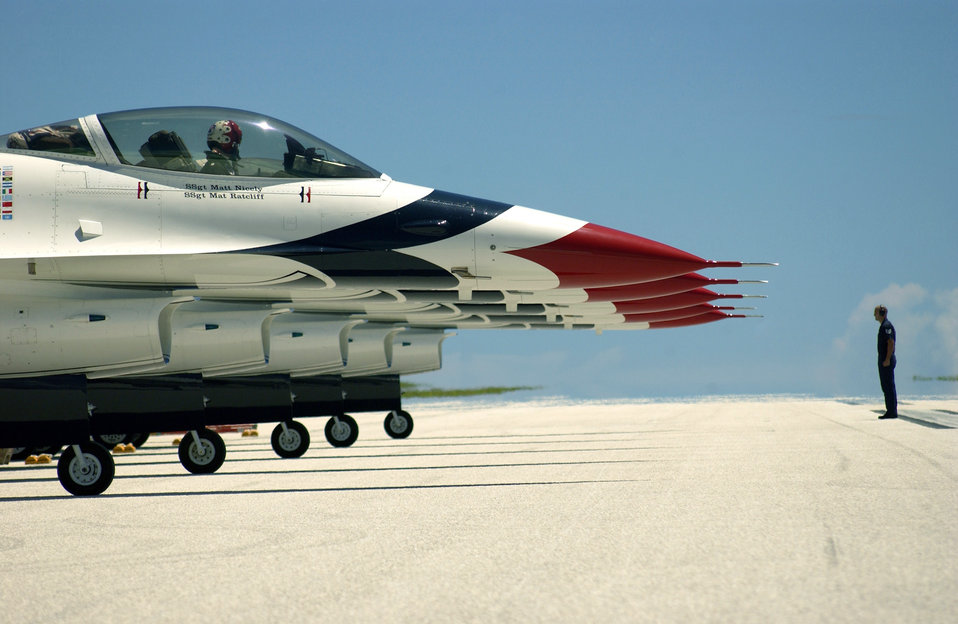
A decade in waiting

ANDERSEN AIR FORCE BASE, Guam -- Tech. Sgt. Brian Plauche guides a taxiing U.S. Air Force Thunderbirds demonstration aircraft after the team landed here Sept. 9. This is the first time in a decade the Thunderbirds have visited Guam. The team will perform during an air show Sept. 12. Sergeant Plauche is assigned with the U.S. Air Force Thunderbirds.